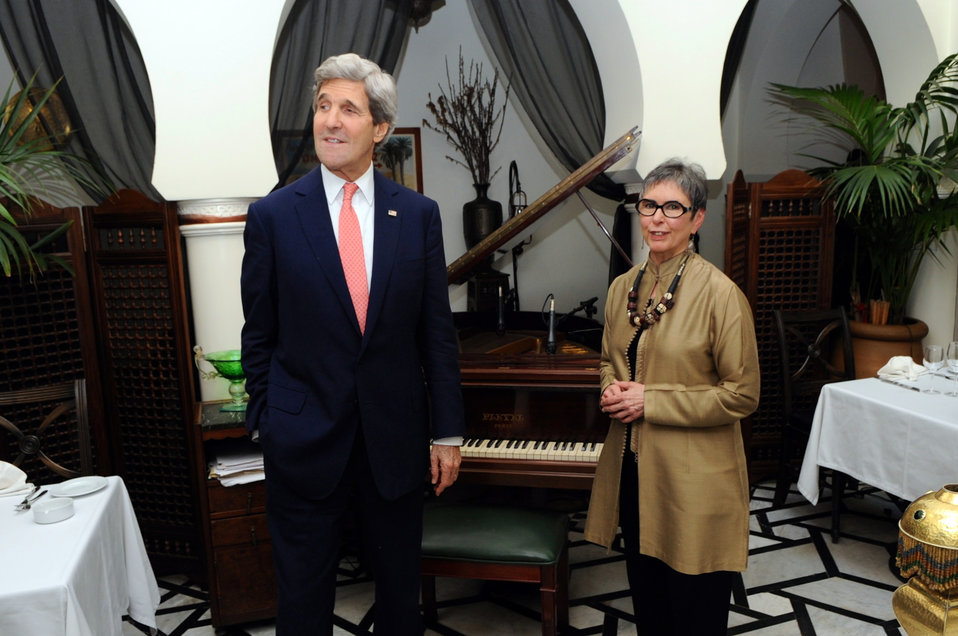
Secretary Kerry Examines Dining Room at Rick's American Cafe in Casablanca

U.S. Secretary of State John Kerry chats with proprietor Kathy Kriger - a former State Department Foreign Service Officer - while visiting the main dining room in Rick's American Cafe in Casablanca, Morocco, on April 4, 2014.